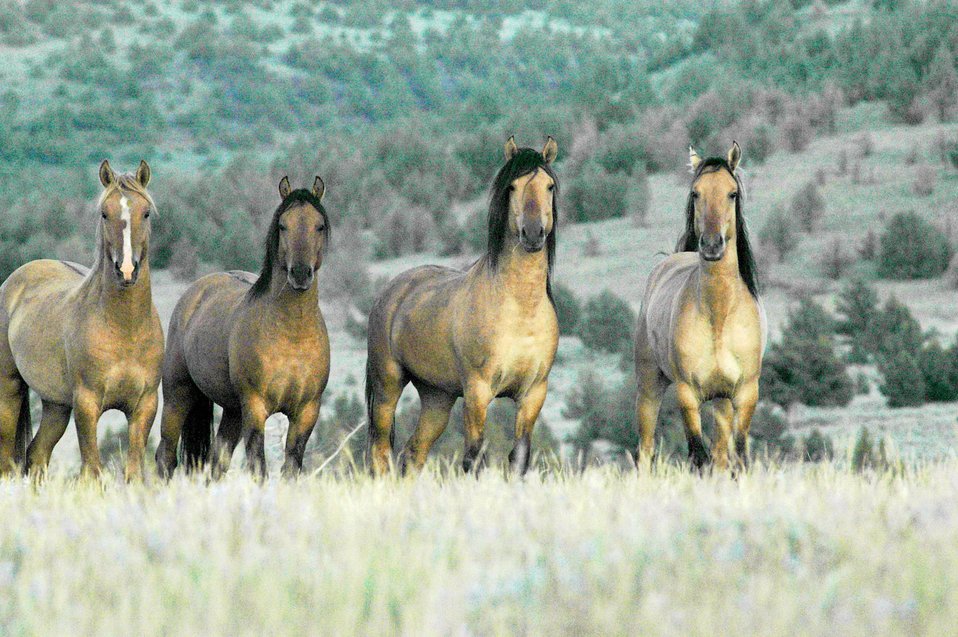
Kiger horses roam the plateaus of the Kiger Wildhorse Herd Management Area near Steens Mountain in Southeastern Oregon.